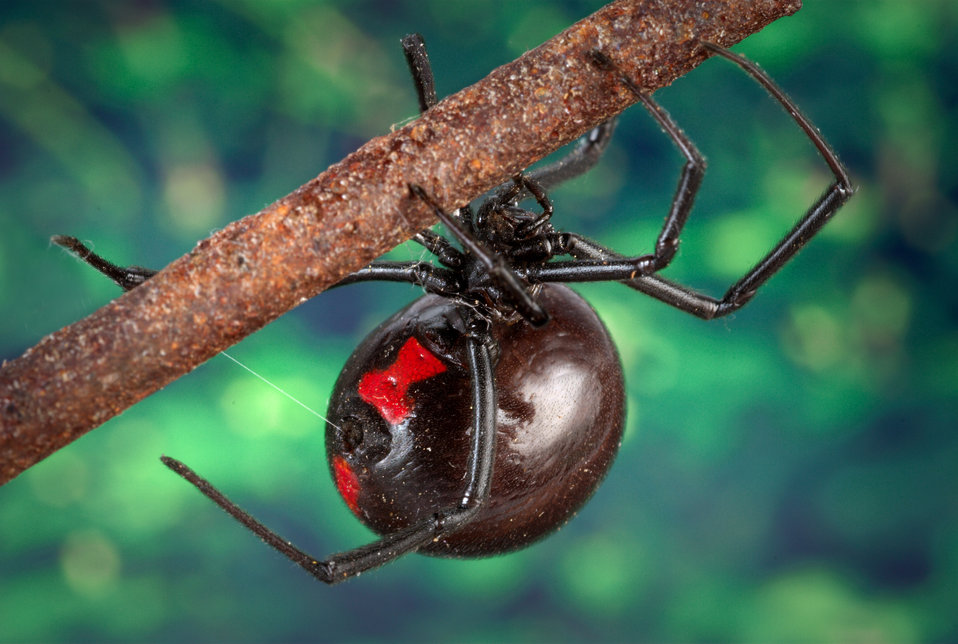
Black widow spider

This 2007 photograph, captured by CDC biomedical photographer, James Gathany, depicted a female black widow spider, Latrodectus mactans, as she was in the process of spinning her web upon a tree branch. You'll note the characteristic red hourglass located on her inferior abdominal surface, which can vary in coloration from yellowish, to shades of orange and red, and at times, can even be white. The female's body is an overall shiny jet-black in color. This spider was found on a farm, here in the state of Georgia.